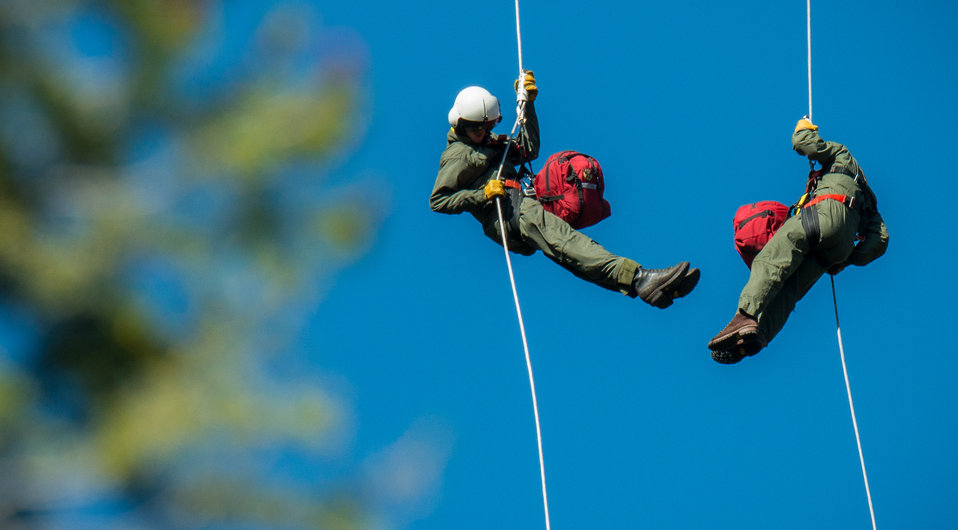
Veteran wildland firefighter rappellers use various techniques to negotiate the wind from the helicopter rotor blades above them, and away from tree branches, beside and below, as they perform a controlled and safe rappel at the U.S. Department of Agriculture (USDA) U.S. Forest Service (USFS) National Helicopter Rappel Program’s Rappel Academy at Salmon Air Base in Salmon, ID on Thursday, May 15, 2014. From May 12, 2014, 72 veteran rappellers from all over the nation, 30 support staff, and three helicopters with flight crews attend the training at Salmon Air Base. Participants will rappel into the Perreau Creek area. The annual training is delivered in accordance with the National Rappel Operations Guide; strengthen leadership, teamwork, and communications within the rappel community, and produces quality aerial delivered firefighters for use in fire and aviation operations. The USDA Forest Service National Helicopter Rappel Program’s primary mission is initial attack. Rappel crews may be utilized for large fire support, all hazard incident operations, and resource management objectives.